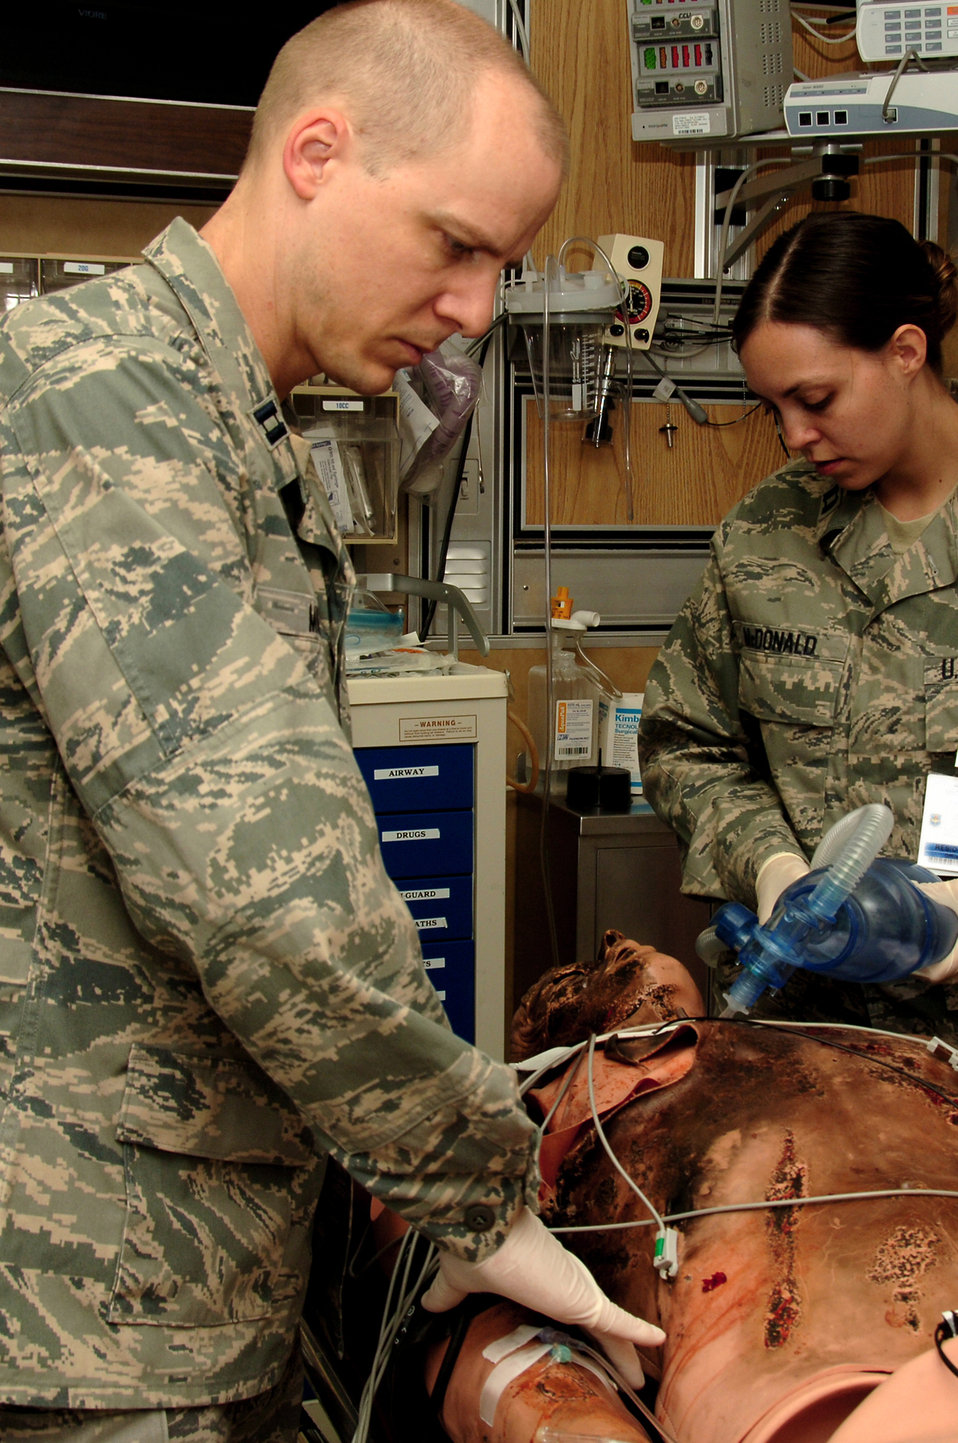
Simulation grand rounds trains EM residents

Emergency medicine residents Capt. (Dr.) Tylan Muncy, 59th Surgical Specialties Squadron, and Capt. (Dr.) Carolyn McDonald, 59th Emergency Medicine Squadron, evaluate a burn patient during simulation grand rounds May 21 in the Wilford Hall Medical Center simulation center, Lackland Air Force Base, Texas. The simulation cases can be adapted and created to focus on the needs of a wide range of learners to include paramedics, nurses, medical students and physicians.